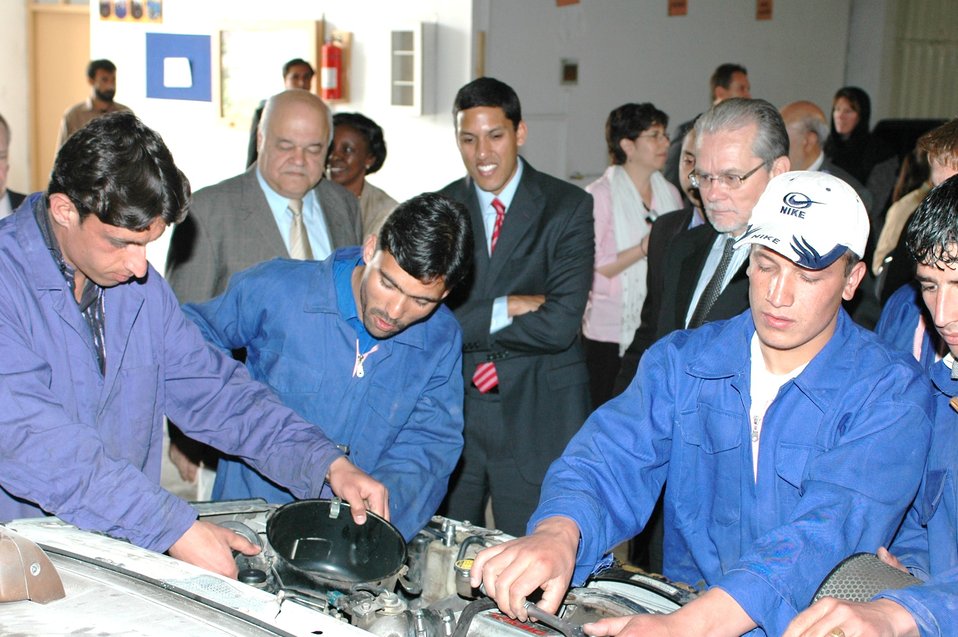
Dr Shah Visits Votech in Kabul